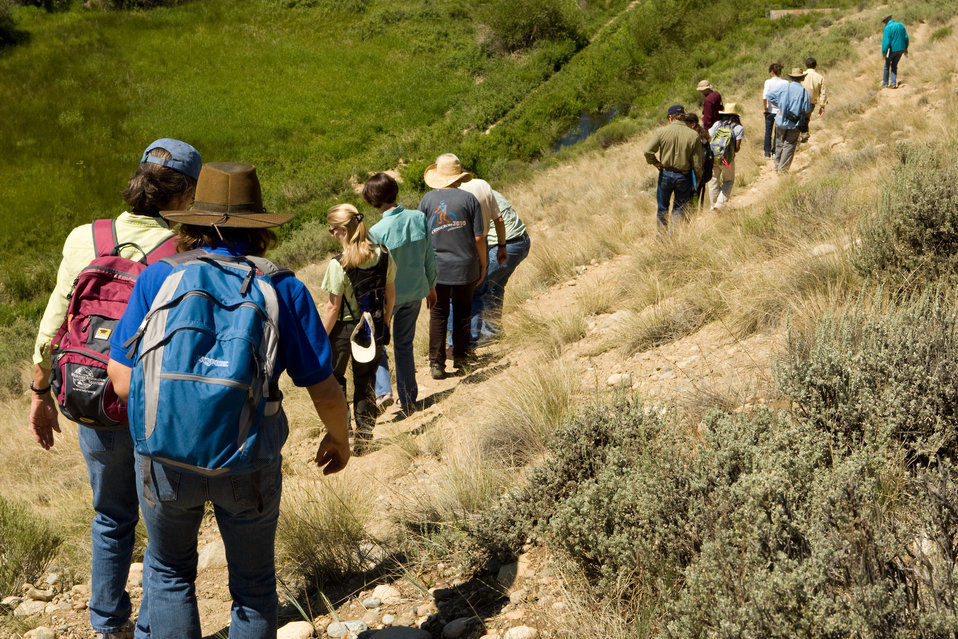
Colorado Rare Plant Conservation Initiative

The Colorado Rare Plant Conservation Initiative (RPCI) is a partnership of 23 statewide and regional agencies, private organizations, and academic institutions working to conserve 121 rare plants in Colorado. As part of these efforts the group developed the Colorado Rare Plant Conservation Strategy, developed Best Management Practices to reduce energy development impacts, addressed climate change, and developed focused strategies for the conservation of individual species at eight priority landscapes. The group has also worked to coordinate volunteer efforts for plant conservation across the state.